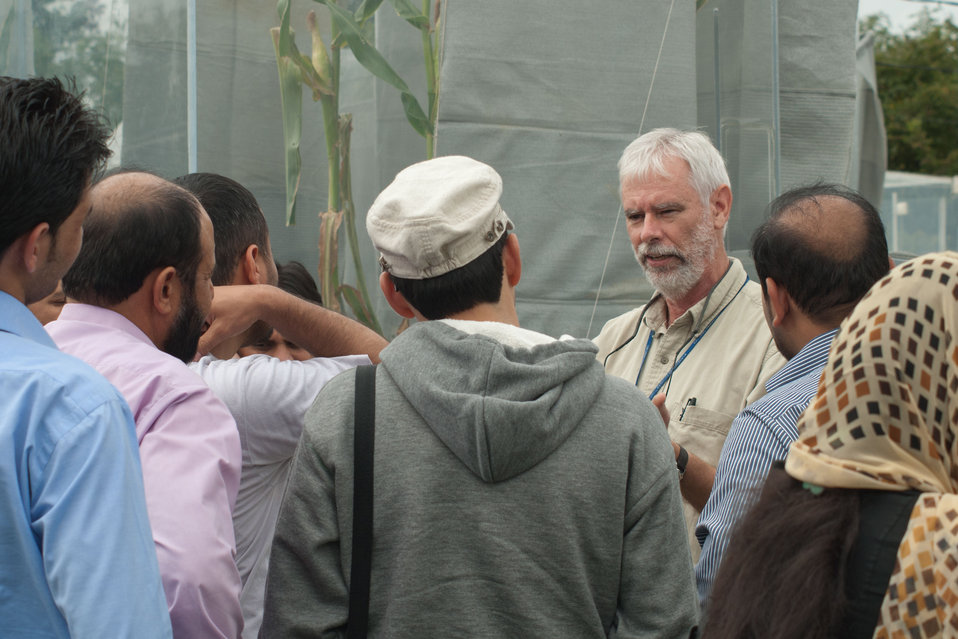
U.S. Department of Agriculture (USDA), Agriculture Research Service's (ARS) Dennis Timlin (khaki shirt), spoke with 12 Borlaug Fellows from Afghanistan’s Ministry of Agriculture, Irrigation and Livestock (MAIL) about the Global Climate Change Lab at the ARS facility’s Soil Plant Atmosphere Research (SPAR) units in Beltsville, Md. on Wednesday, September 21, 2011. SPAR units provide precise control of the major environmental variables influencing crop growth including temperature, humidity, and atmospheric carbon dioxide concentration. The SPAR units are fully automated to measure crop canopy gas exchange including photosynthesis, respiration, transpiration and water use efficiency.